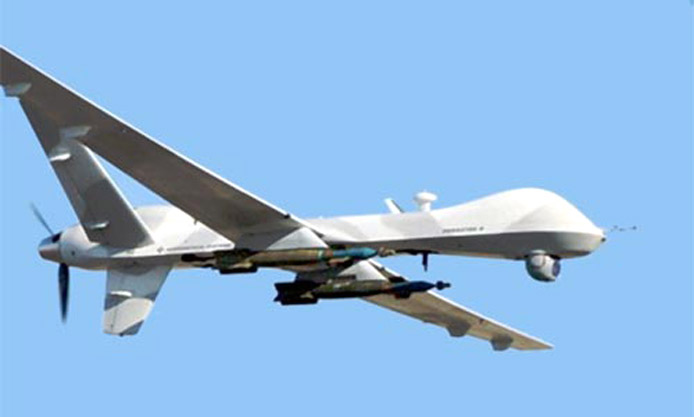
'Reaper' moniker given to MQ-9 unmanned aerial vehicle

The